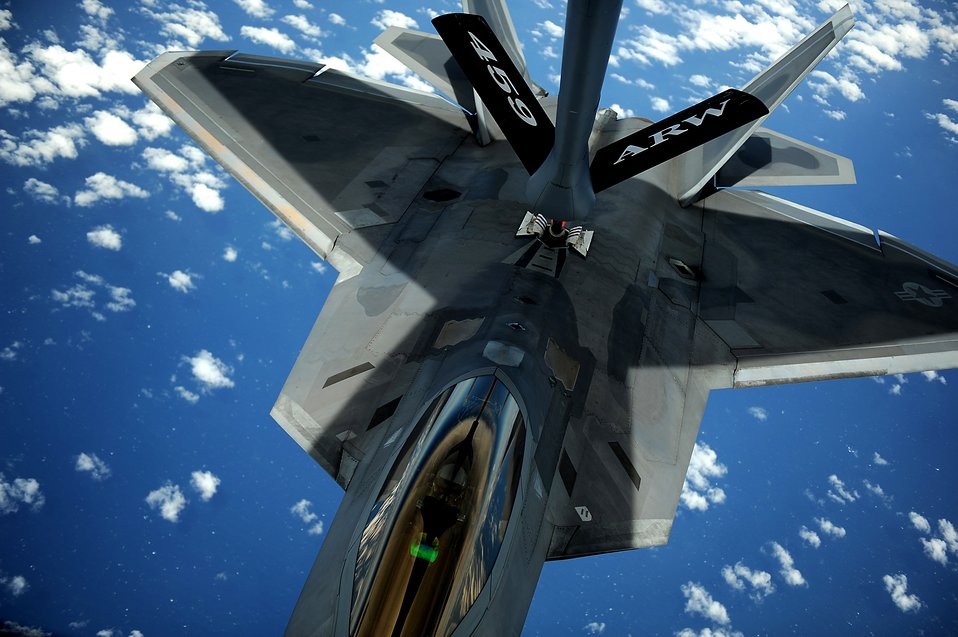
F-22 Raptor

A KC-135 Stratotanker with the 756th Air Refueling Squadron, Joint Base Andrews Naval Air Facility, Md. refuels a 1st Fighter Wing's F-22 Raptor from Joint Base Langley-Eustis, Va. off the east coast on May 10, 2012. The first Raptor assigned to the Wing arrived Jan. 7, 2005. This aircraft was allocated as a trainer, and was docked in a hanger for maintenance personnel to familiarize themselves with its complex systems. The second Raptor, designated for flying operations, arrived Jan. 18, 2005. On Dec. 15, 2005, Air Combat Command commander, along with the 1 FW commander, announced the 27th Fighter Squadron as fully operational capable to fly, fight and win with the F-22. (U.S. Air Force Photo by: Master Sgt. Jeremy Lock)